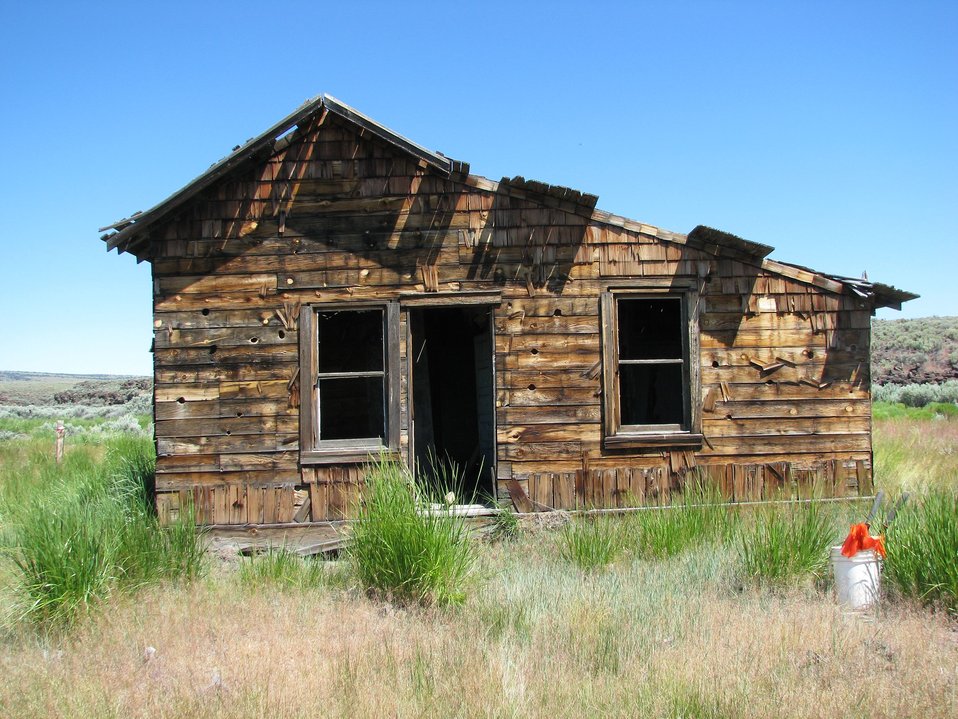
Anna Flook Homestead1

Located on what is now Hart Mountain National Antelope Refuge, Oregon